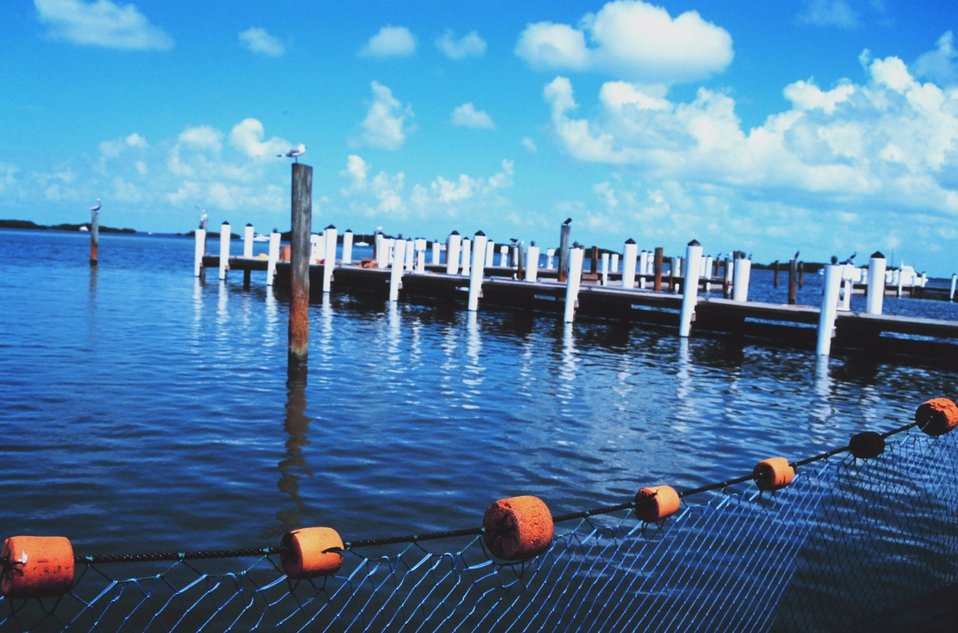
A pier at Islamorada Fish Co. restaurant and market